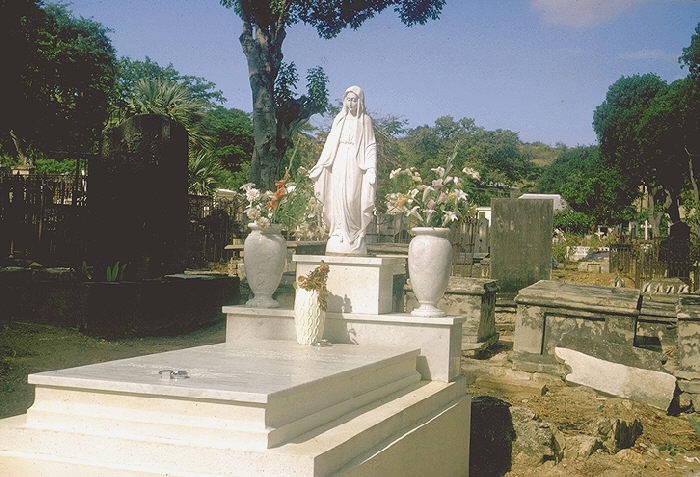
Cemetery vases, mosquito breeding site. St. Croix, Virgin Islands.